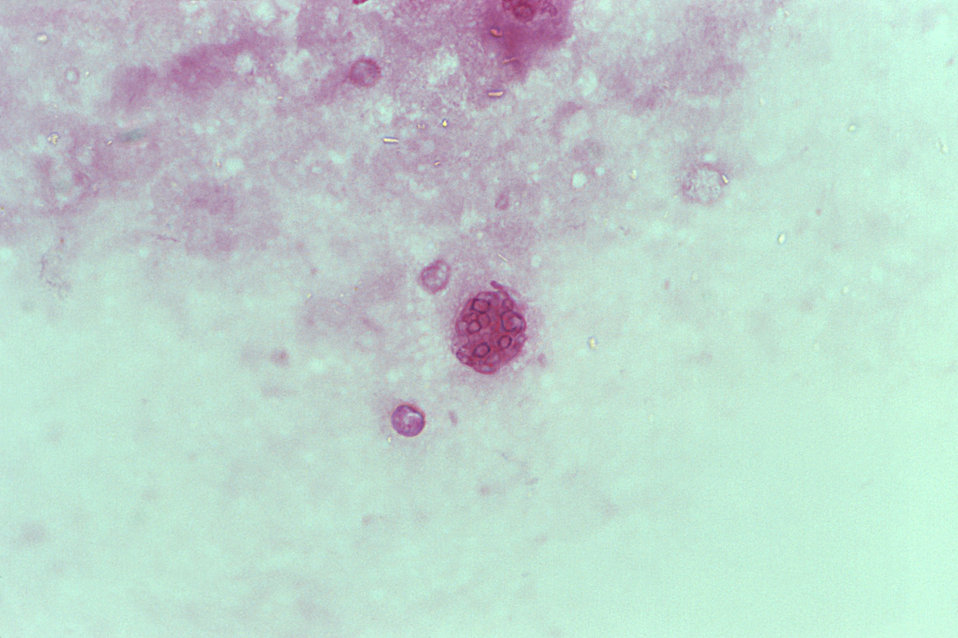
This photomicrograph revealed some of the histopathologic characteristics found within a pus specimen, which was prepared using periodic acid-Schiff (PAS), and which had been harvested from a skin lesion in a case of cutaneous coccidioidomycosis. In this particular specimen you'll note the chlamydospore, or immature spherule of a Coccidioides immitis fungal organism. As the reproductive structure of this, as well as other types of fungi, this spherule is also known as a chlamydoconidium, and contains the organism's endospores.